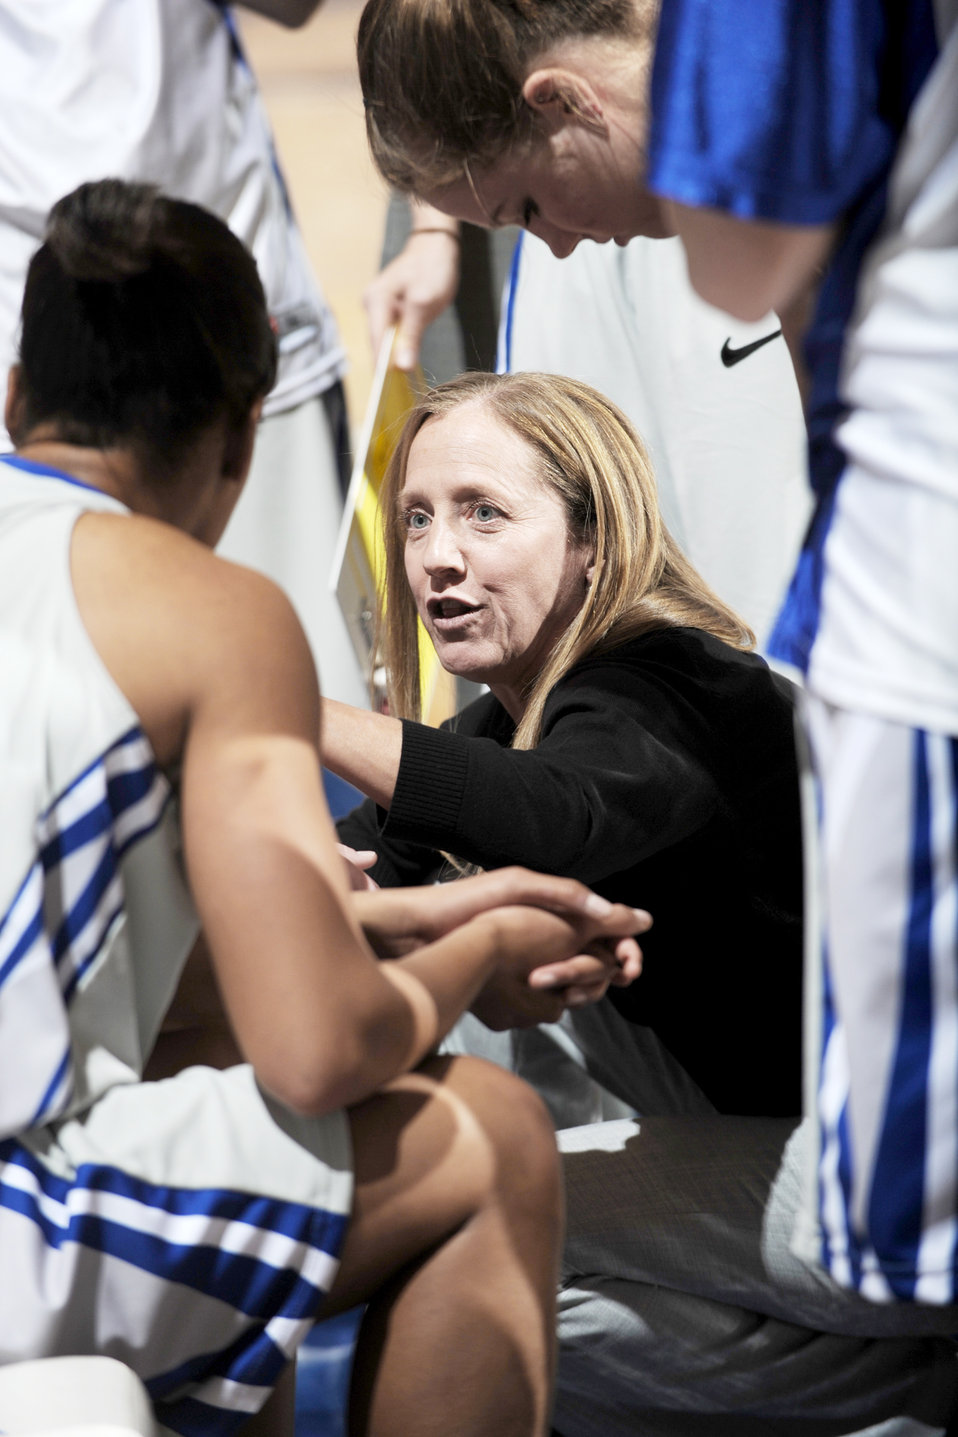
Women's basketball: Bradley University runs past Air Force

Air Force head coach Ardie McInelly talks to the Falcons during a time out during the U.S. Air Force Academy game against Bradley University at the Academy's Clune Arena Dec. 19, 2009. Air Force lost the game 62-45.